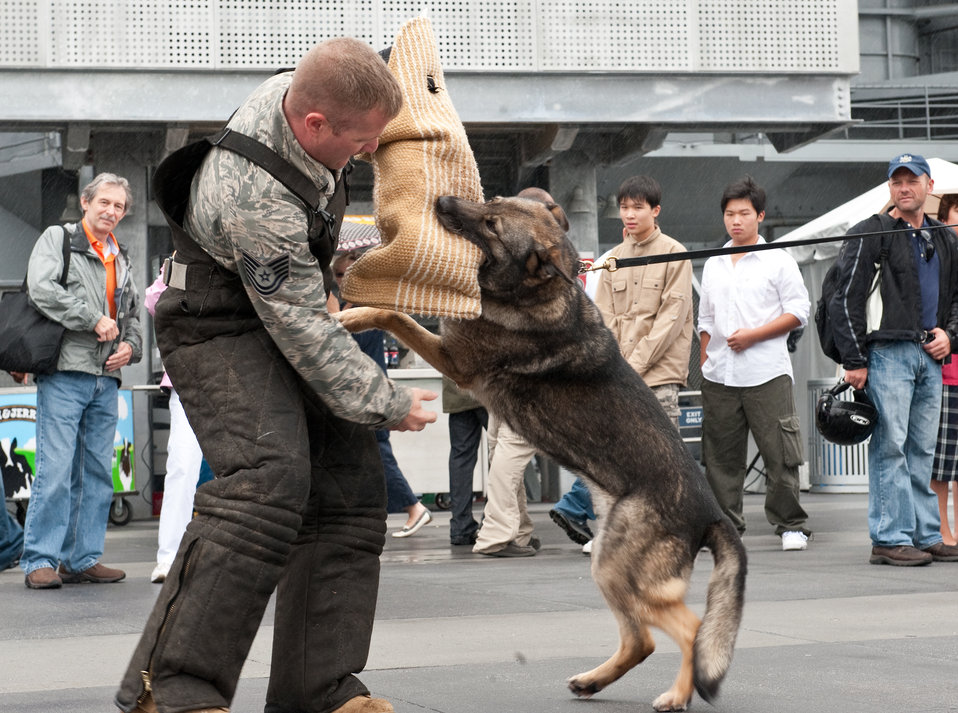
Air Force Week New York City Proclamation Ceremony

Tech. Sgt. Tim Shaw (in protective clothing) is the decoy that a miitary working dog trains to attack to protect the handler, during a training demonstration, following the Air Force Week New York City proclamation ceremony at the USS Intrepid on Aug. 24, 2010. Sgts. Shaw and Lutman are assigned to the 87th Security Forces Squadron, McGuire Air Force Base, Del. The event at the Intrepid Sea, Air & Space Museum was highlighted by a six-ship flyover by the USAF Thunderbirds. The Honorable Michael Donley, Secretary of the Air Force attended, along with General Raymond Johns, Commander of Air Mobility Command. The Police Commissioner of the City of New York, the Honorable Raymond Kelly, represented NYC. Mr. Greg Kelly of